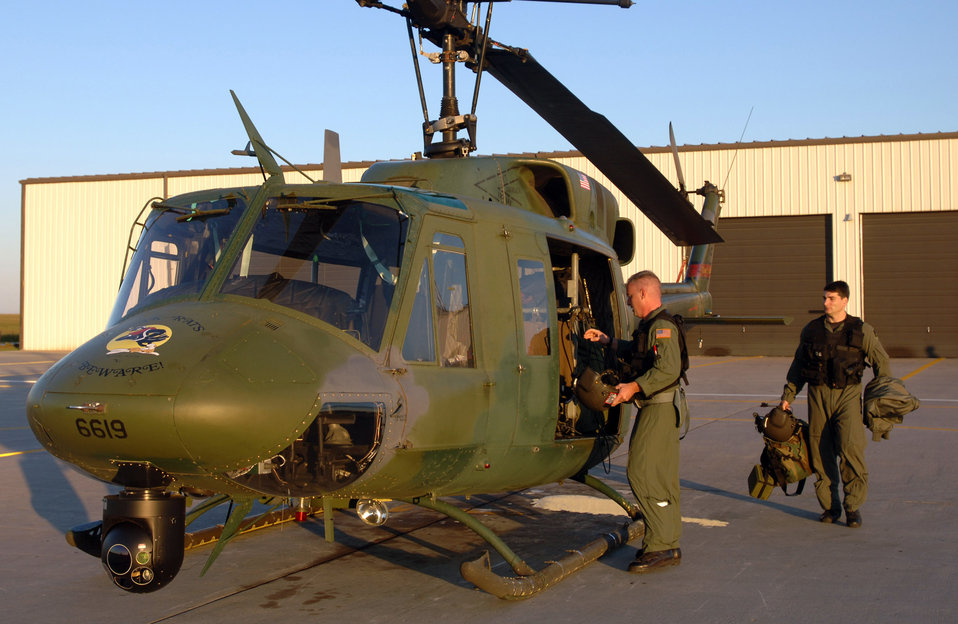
Minot helicopter flight supports hurricane relief efforts

MINOT AIR FORCE BASE, N.D. --- Tech. Sgt. James Heath (left) and Maj. Brian McGraw finish loading a UH-1N Huey in preparation for takeoff here Sept. 2. The crew departed for Columbus Air Force Base, Miss., to assist in the Hurricane Katrina disaster relief efforts. Thirteen people and a helicopter from the 54th Helicopter Flight are deploying to aid the recovery.